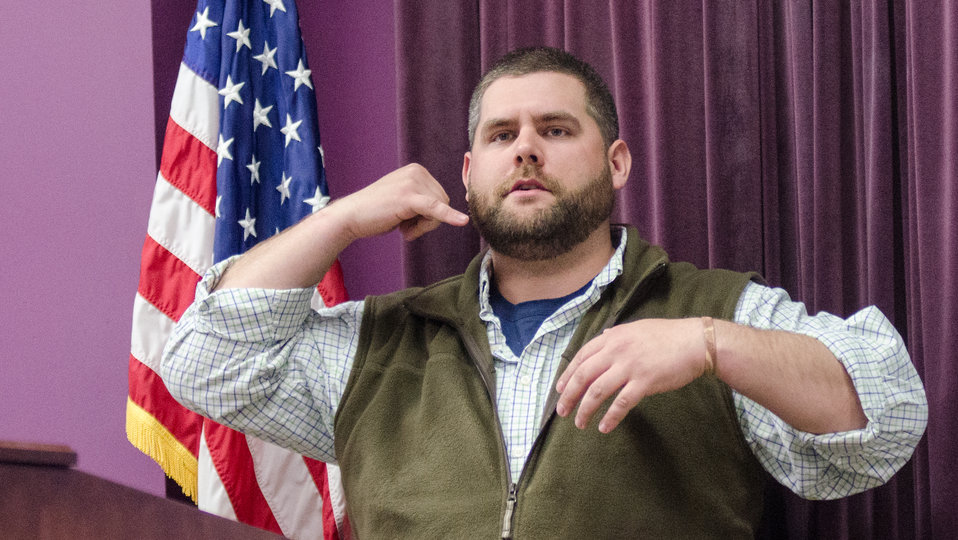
U.S. Department of Agriculture (USDA) Natural Resources Conservation Service (NRCS) Amelia County District Conservationist Derek Hancock encourages farmers to give their nearest USDA office a call about NRCS tools and information that may be of interest to them, during the “Virginia State University (VSU), USDA and Virginia Farmers Working Together” outreach workshop in the VSU, L. Douglas Wilder building on Thursday, March 7, 2013, in Petersburg, VA. Farmers shared and learned new ways to do more with USDA services, and how to apply for programs that will help grow their business.